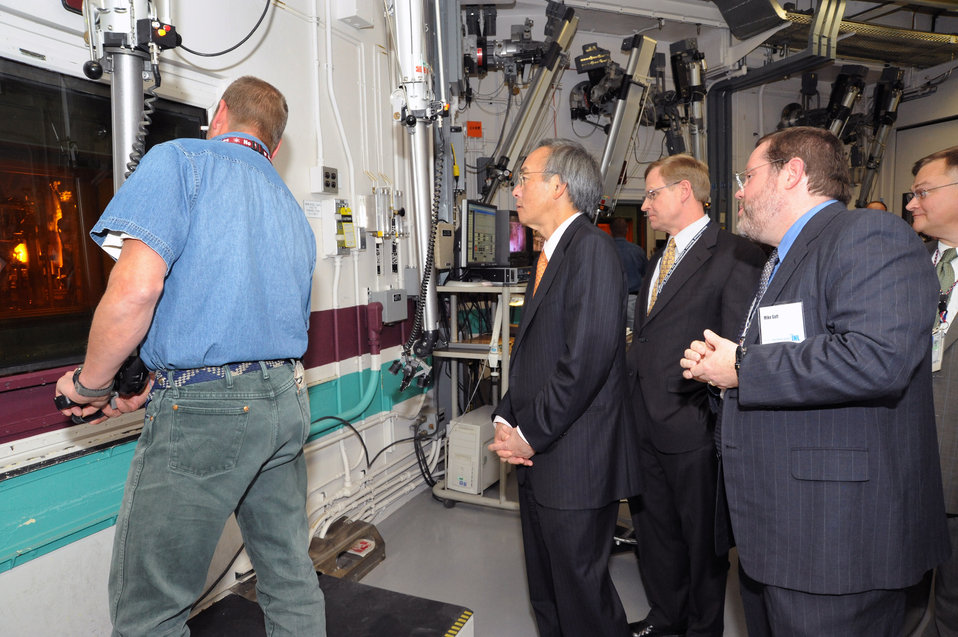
At Idaho National Laboratory, Todd Frickey explain the production element chopper to Secretary Chu, John Grossenbacher, Mike Goff, and Philip Finck.